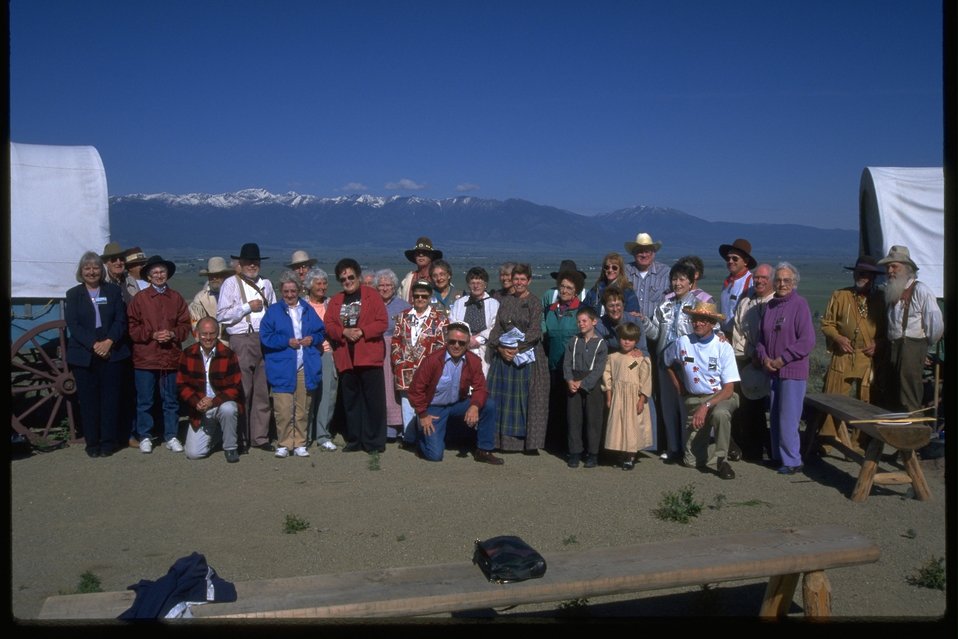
A group shot of the Trail Tenders at the NHOTIC.